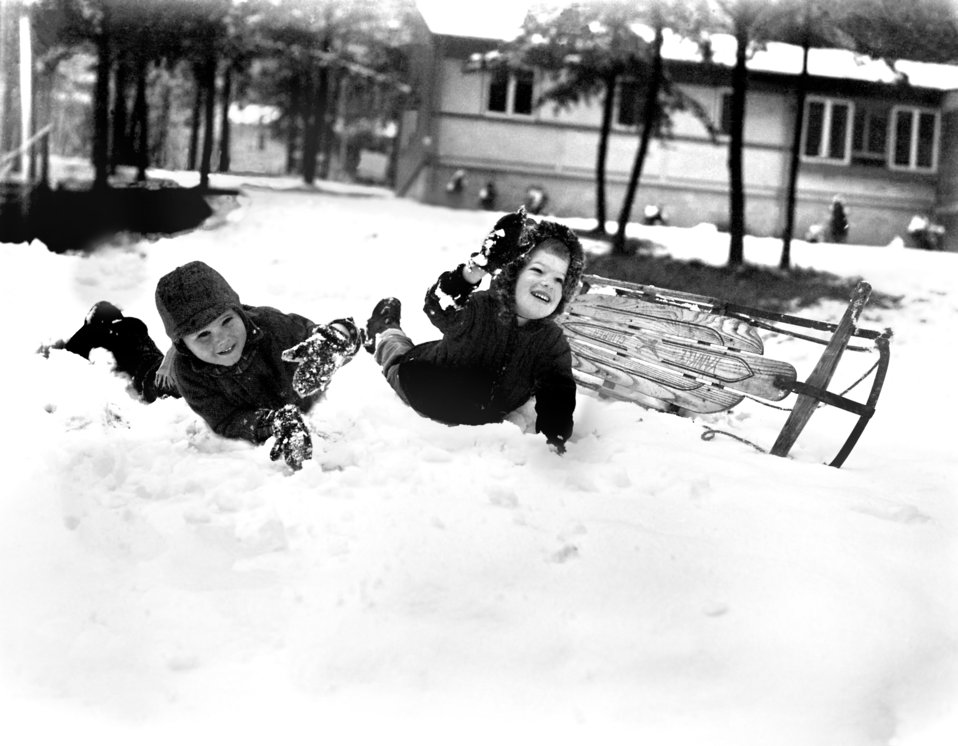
Snow Play in Oak Ridge 1947

3306-16a DOE photo Ed Westcott 2-20-1947 Arthur Peterson and Jeff Tallackson Oak Ridge Tennessee